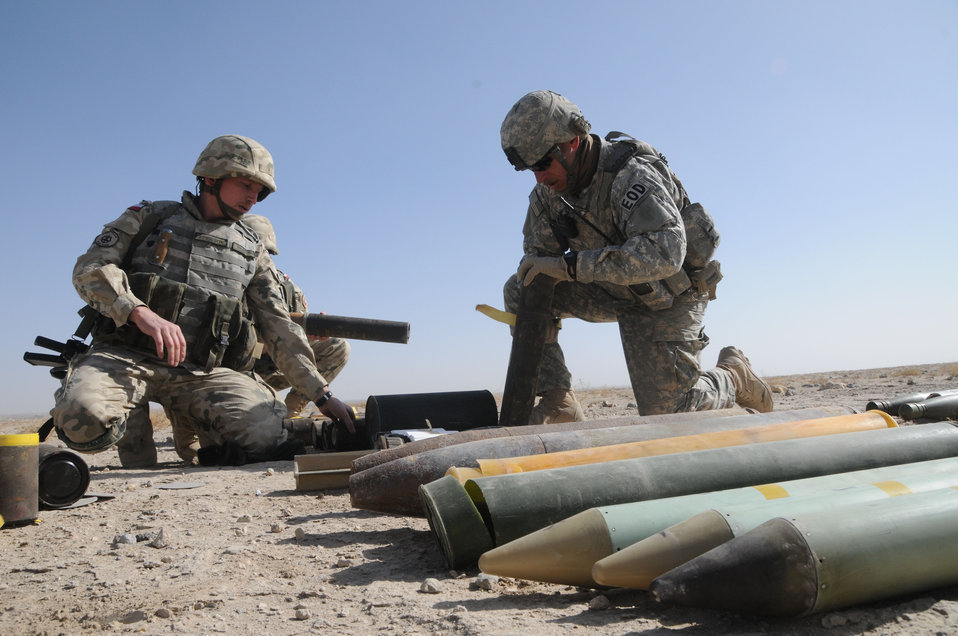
Explosive ordnances leave trace

Sgt. 1st Class Jeff Truex, explosive ordnance displosal operations NCO in charge, left, and a Polish combat engineer, both assigned to Forward Operating Base, Ghazni, open containers containing faulty rockets at an undisclosed location in Ghazni Province, Afghanistan. EOD control detonated over 400lbs of munitions from various sources, such as, the small rewards program, turned in munitions from locals, parts of improvised explosive devices that could not be blown up in place, or faulty rockets that did not fire properly.